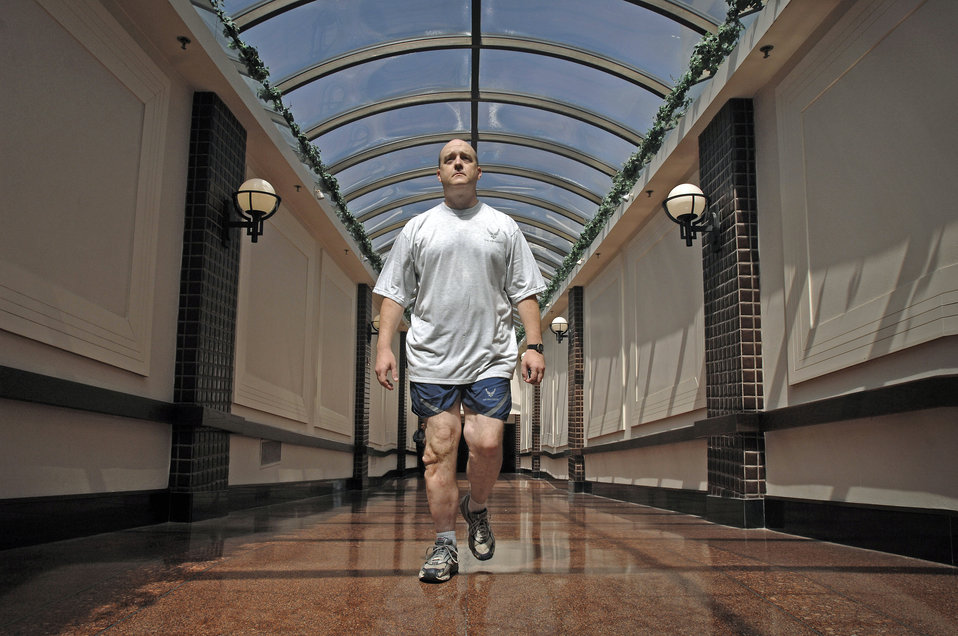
Staying power

Maj. Matthew Conlan walks a couple of miles regularly through the cavernous tunnel system of shops and restaurants below his office in Crystal City, downtown Arlington, Va. Major Conlan was injured in Afghanistan in 2005 and returned to active duty to work at the Air Force's counter-improvised explosive device office in Arlington.